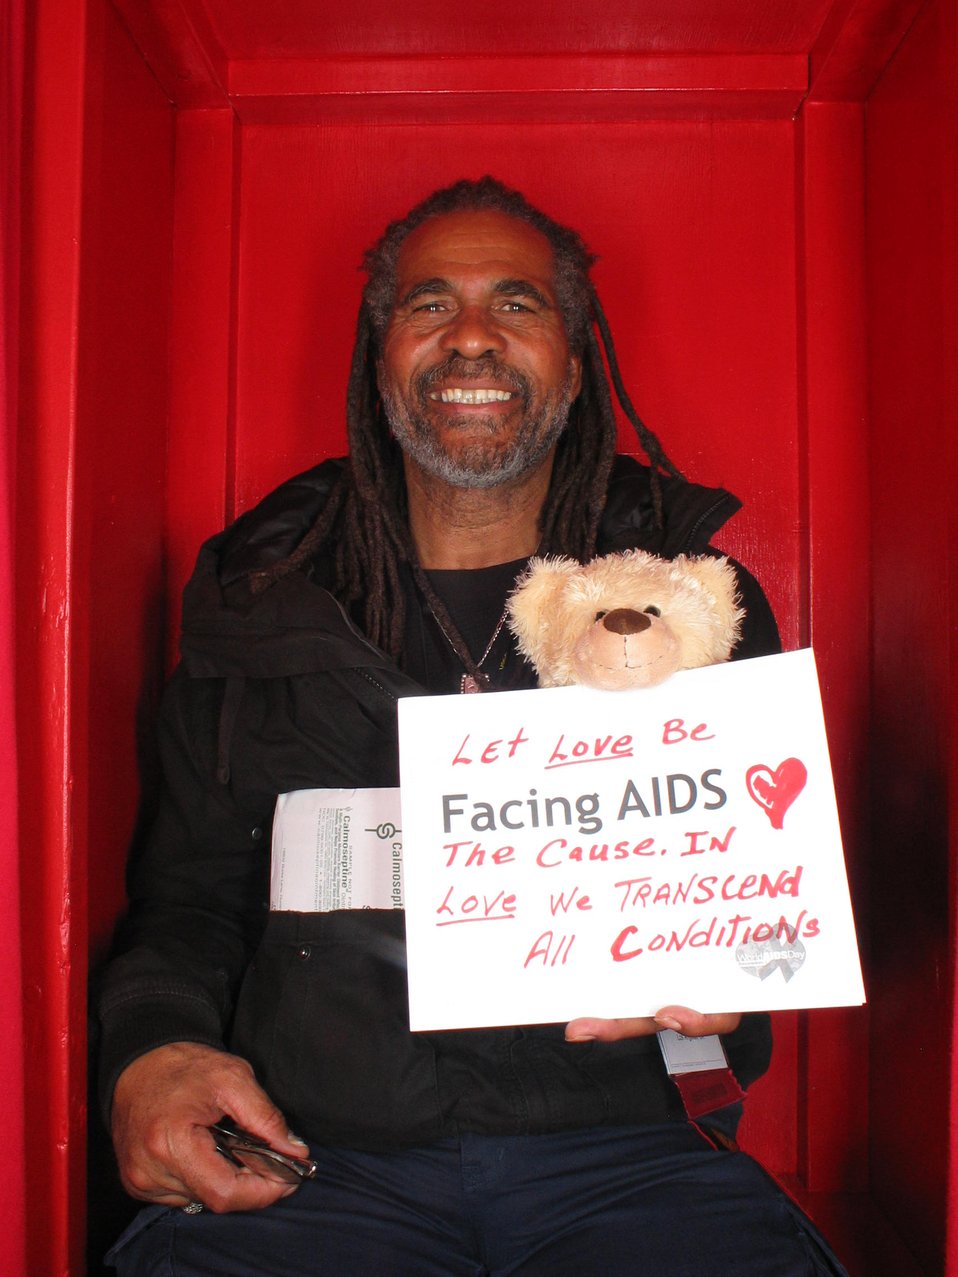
Let love be Facing AIDS the cause. In love we transcend all conditions.